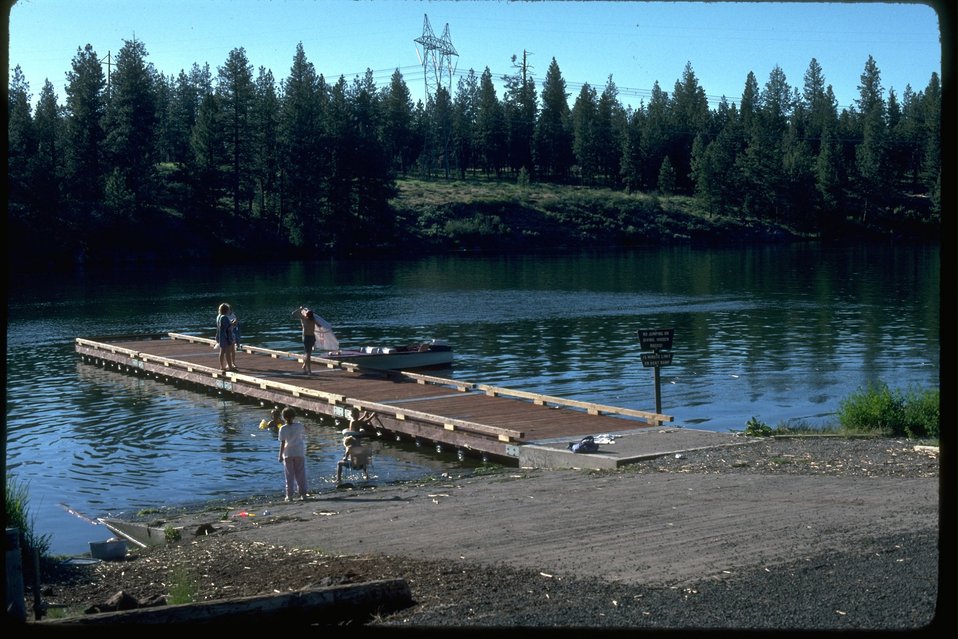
Topsy Campground's Boat Dock.